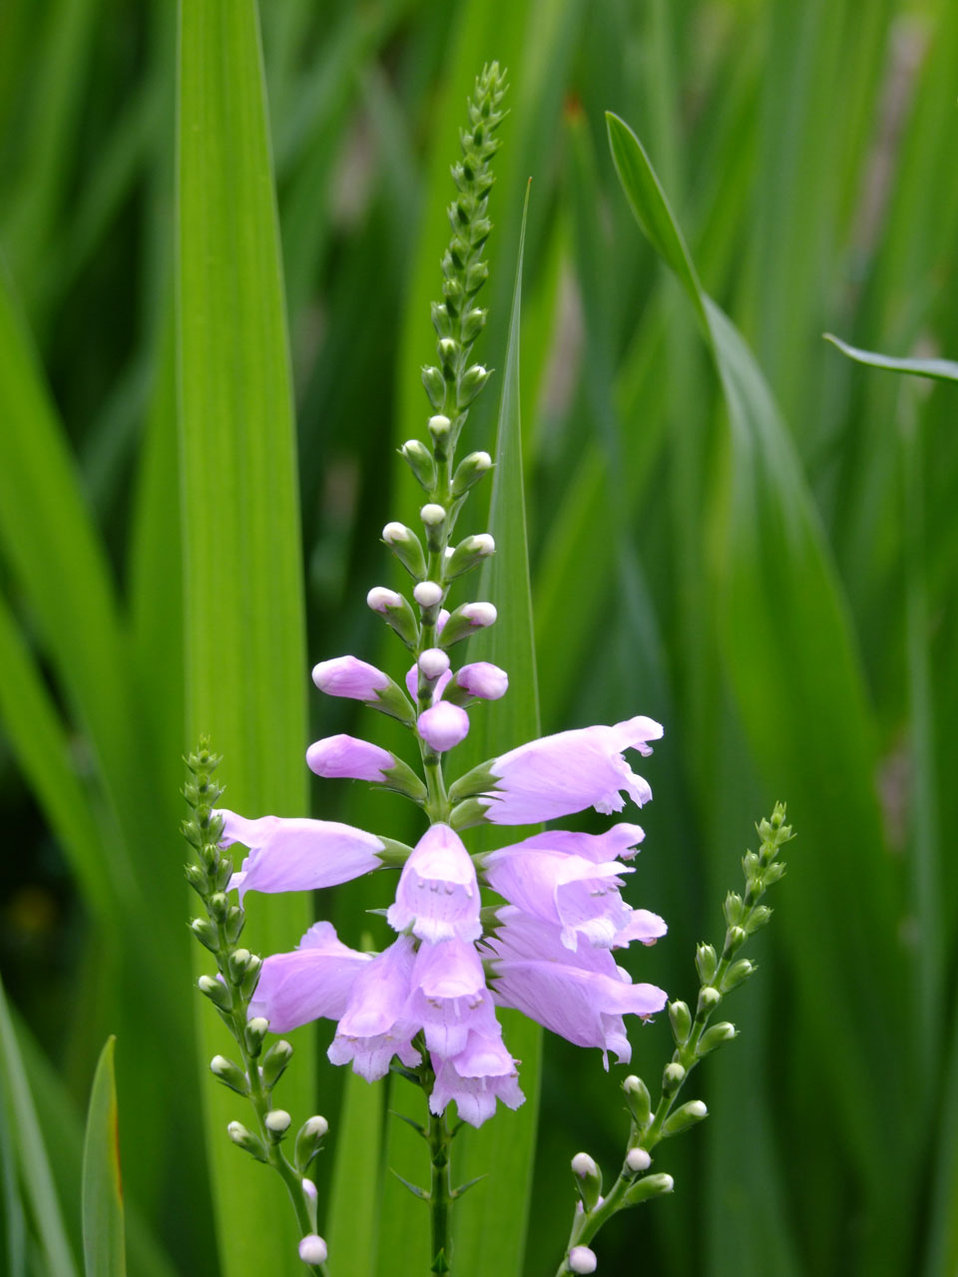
The tower

Small tender flowers on mother's garden.